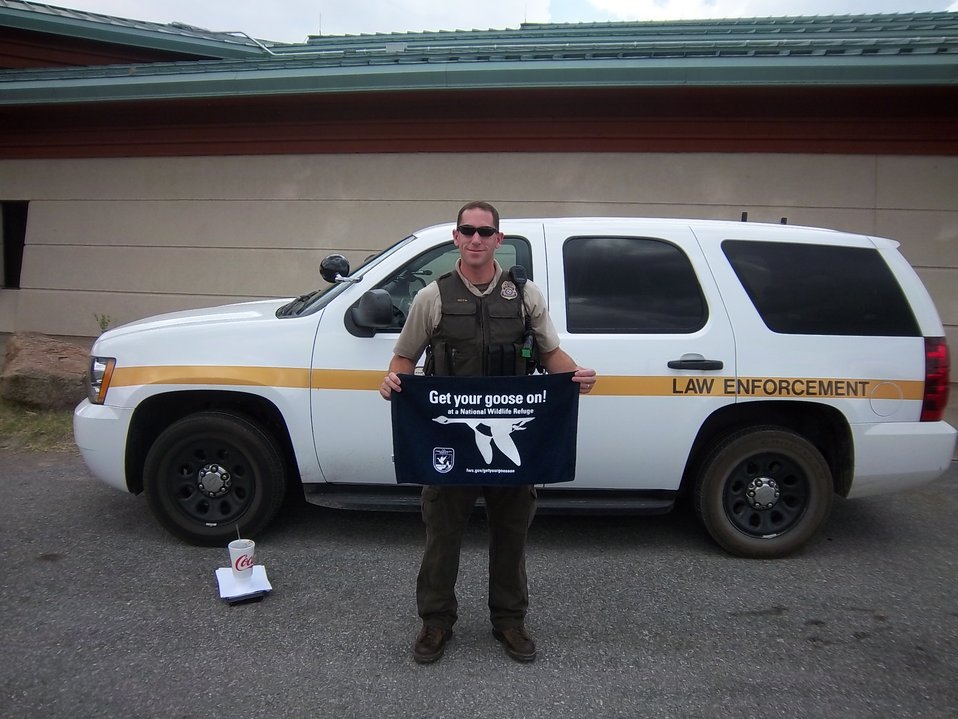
Get Your Goose On!

Wichita Mountains National Wildlife Refuge in Oklahoma.